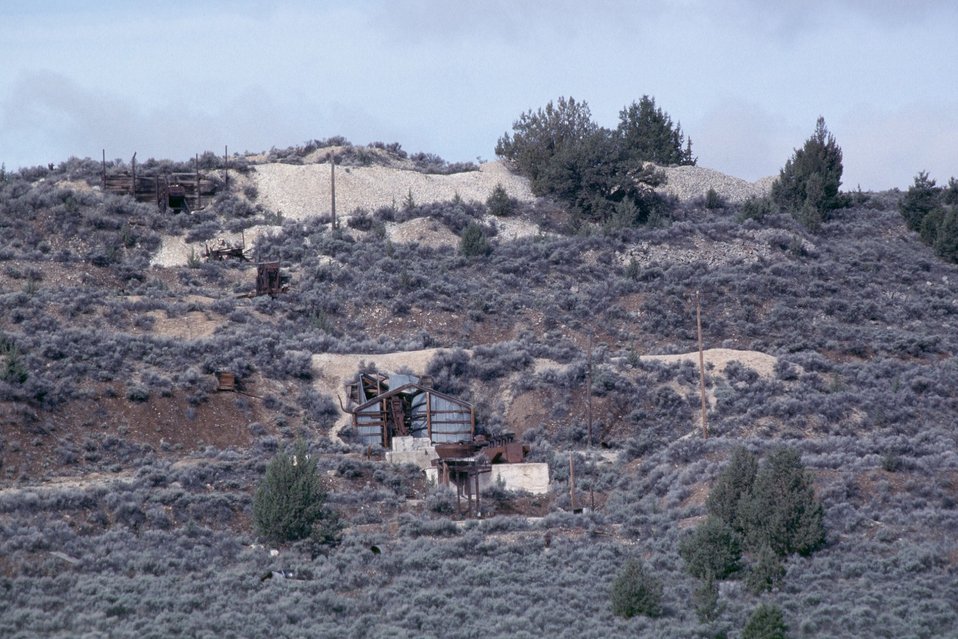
AML Glass Buttes, G5, Burns District The hillside has various levels where mercury ore was crushed into powder, the heavier powder was separated from the lighter powder, water was put into a large funnel to transport the reject powder away from the mill/retort area, and the heavier powder was heated in a retort.